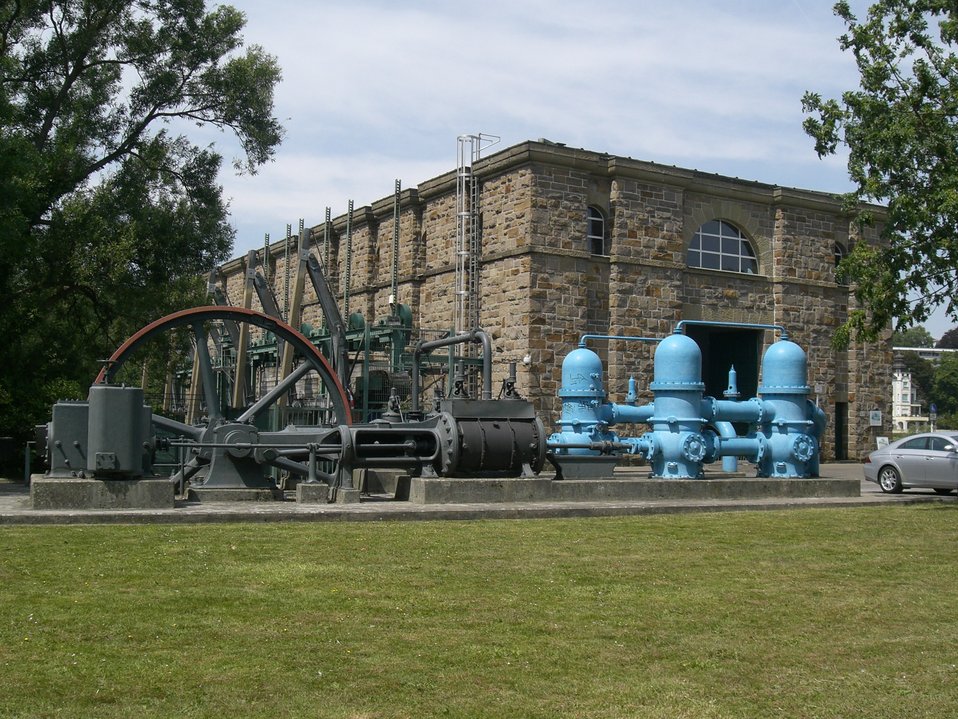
Deutsch: Historische Dampfmaschinenpumpe von 1896 aus dem Ruhrwasserwerk Styrum-Ost vor dem Wasserkraftwerk Kahlenberg in Mülheim an der Ruhr